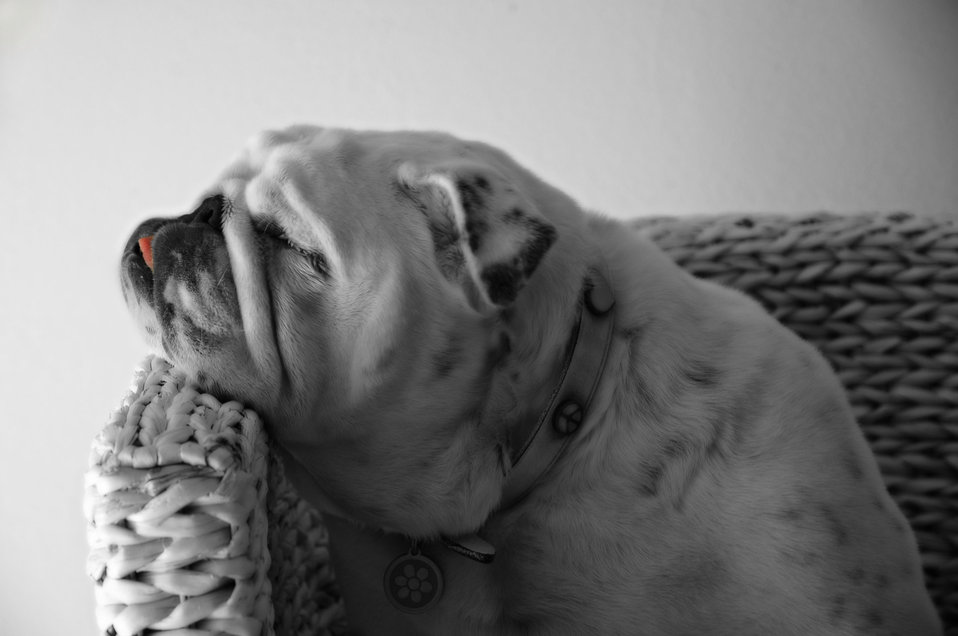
Mia

White bulldog.